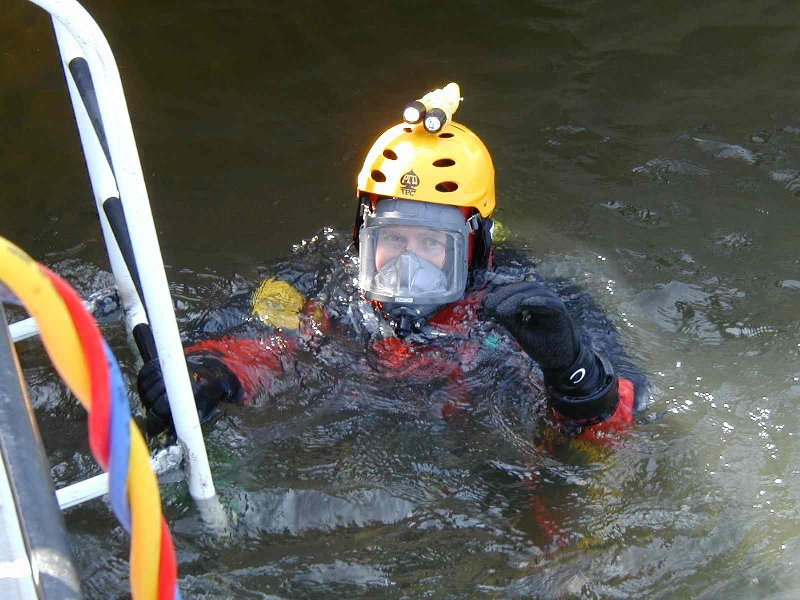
Searching Underwater for Space Shuttle Columbia

EPA diver Bruce Duncan finishes a dive in the search grid for the Shuttle Columbia.

The trajectory area for the accident investigation included the Toledo-Bend Reservoir in Texas. EPA provided response teams underwater as well as on land. www.epa.gov/columbia/

For more information about this dive operation:
www.epa.gov/region10/pdf/diveteam/columbia shuttle 2003.pdf
yosemite.epa.gov/R10/OEA.NSF/investigations/dive team videos